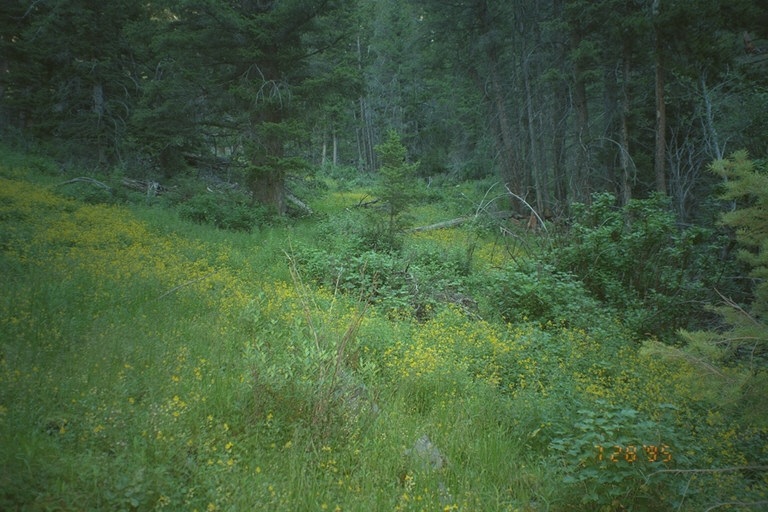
Riparian area Public Lands Salmon Field Office UCSC Upper Columbia Salmon Clearwater District